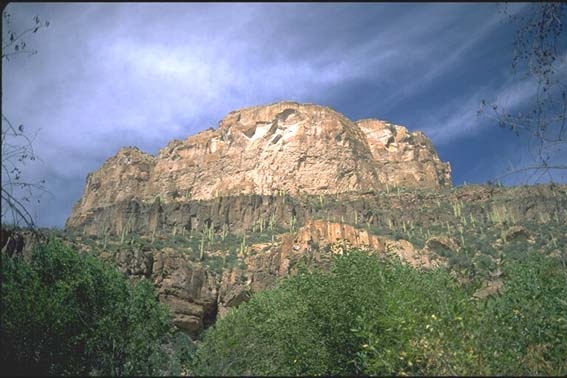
Aravaipa Canyon Wilderness